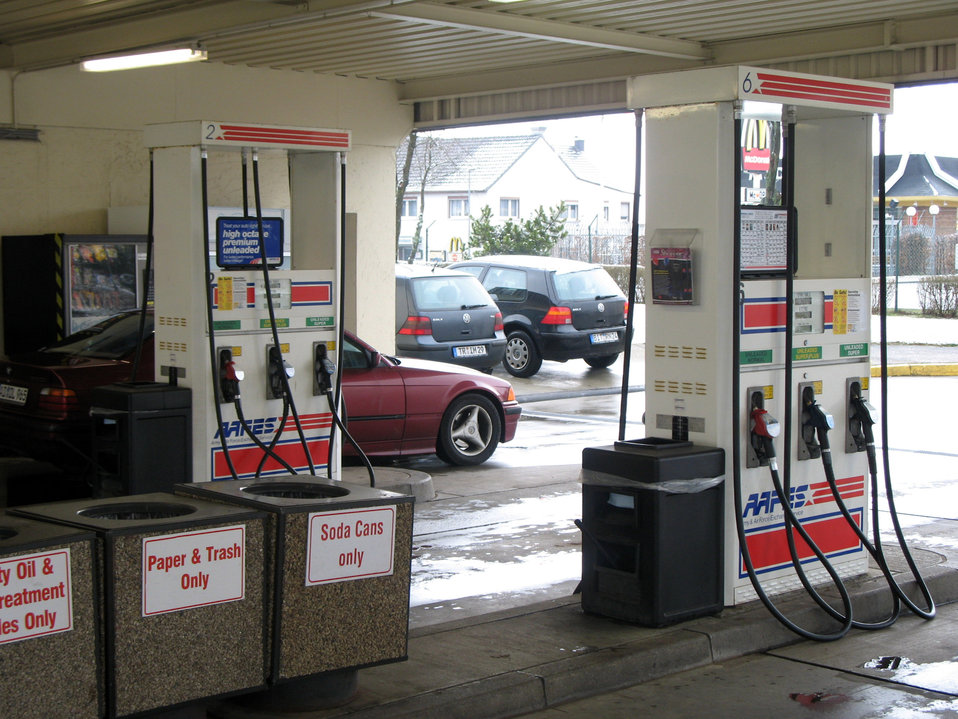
AAFES adjusts gas pricing overseas

Starting Feb. 1, Army and Air Force Exchange Service officials began changing prices for gas overseas from a monthly basis to a weekly basis.